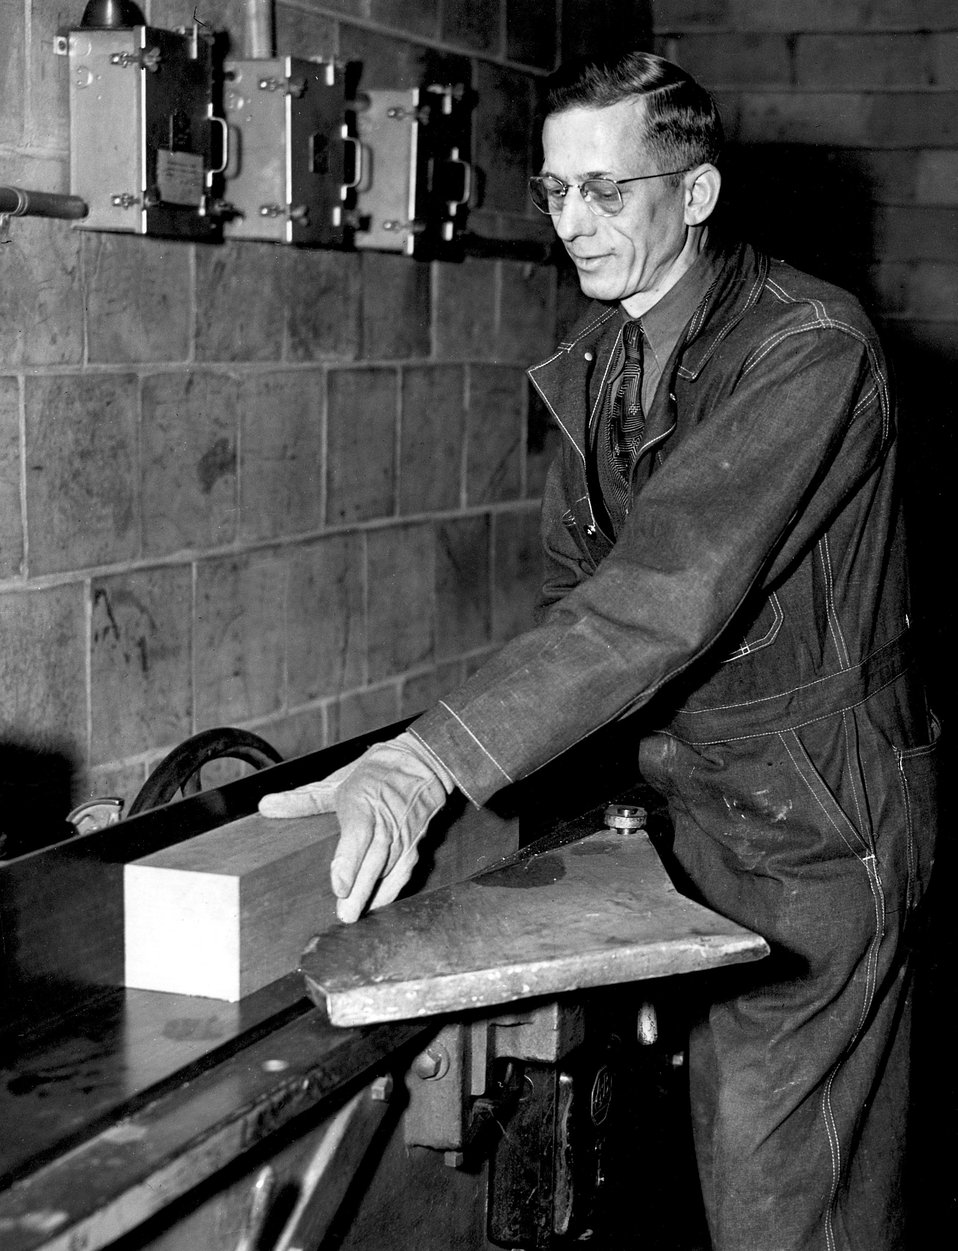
Augustus Knuth..